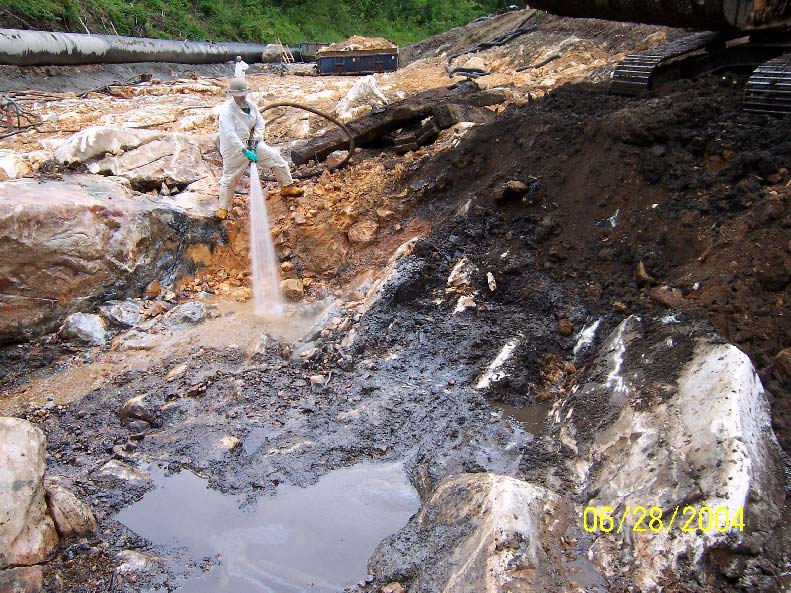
(Earlier photo) June 2004, High pressure washing of NAPL-stained bedrock

This is a closer view of the oil stained bedrock that was along this section of the Housatonic prior to the late '90s cleanup. This was part of the '1.5 mile reach' cleanup.

NAPL stands for 'A liquid solution that does not mix easily with water. Many common ground water contaminants, including chlorinated solvents and many petroleum products, enter the subsurface in nonaqueous-phase solutions.” – National Research Council, 1993